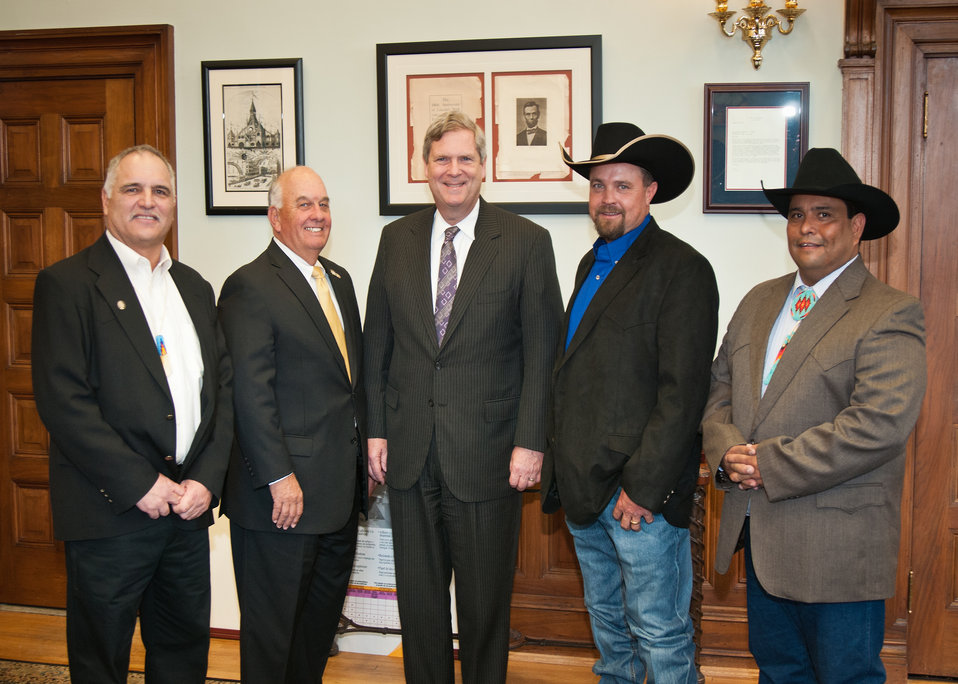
Agriculture Secretary Tom Vilsack meets with members of the Council for Native American Farming and Ranching at the Agriculture Department on December 5, 2012, in Washington, D.C., (Left to right) Gerald Lunak, Jerry McPeak, Sec. Vilsack, Porter Holder, and Mark Wadsworth.